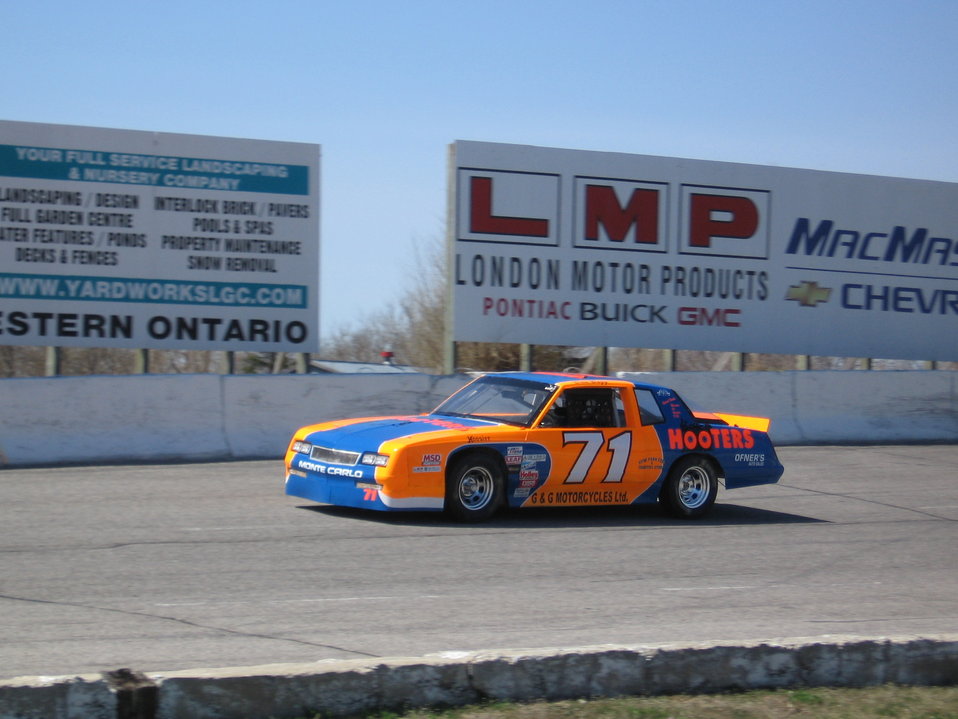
Photo of a Delaware Speedway Street Stock.